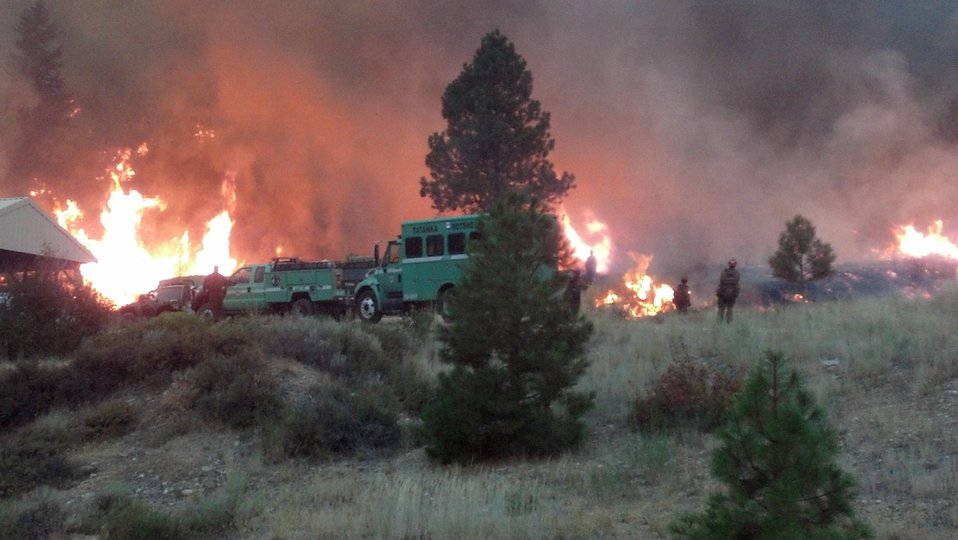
The Tatanka Hotshots work the fire line at the Elk complex Fire. The Elk Complex Fire in the Boise National Forest near Pine, ID began on Aug. 08, 2013 by lightning has consumed approximately 130,178 acres and is approximately 65% contained.